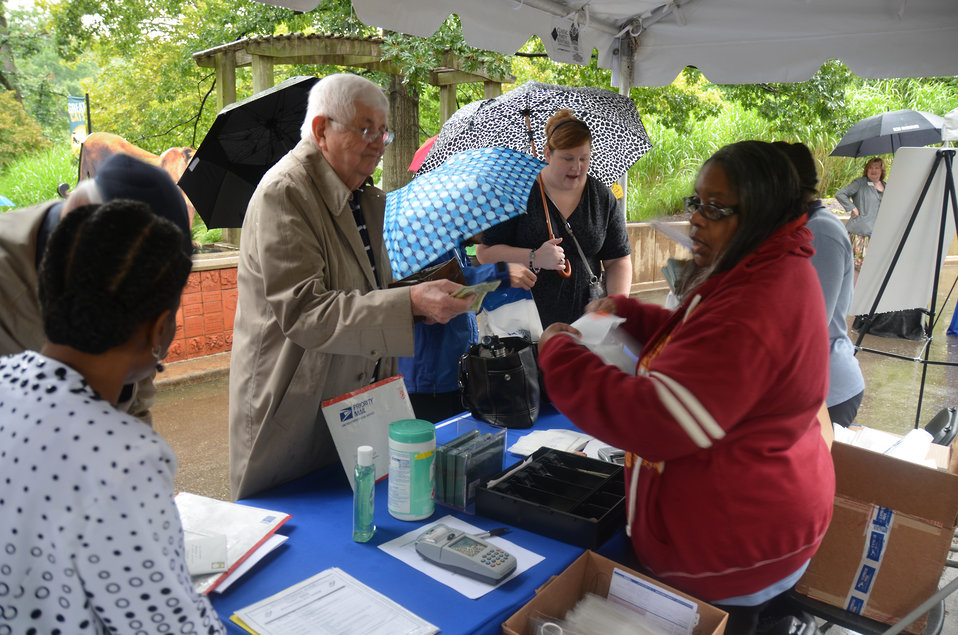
Save Vanishing Species Stamp First Day of Issue